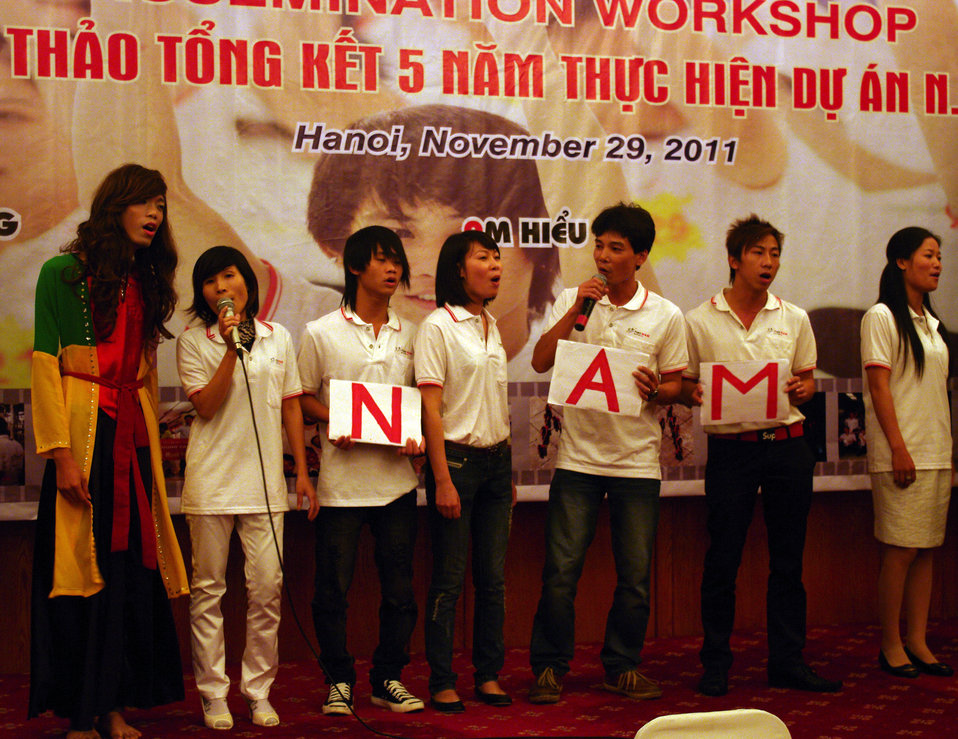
USAID Supports HIV Awareness among Street Youth and Young Men

Trainers and peer educators tell their stories on November 29, 2011, in Hanoi, VietnamTrainers and peer educators tell their stories on November 29, 2011, in Hanoi, Vietnam